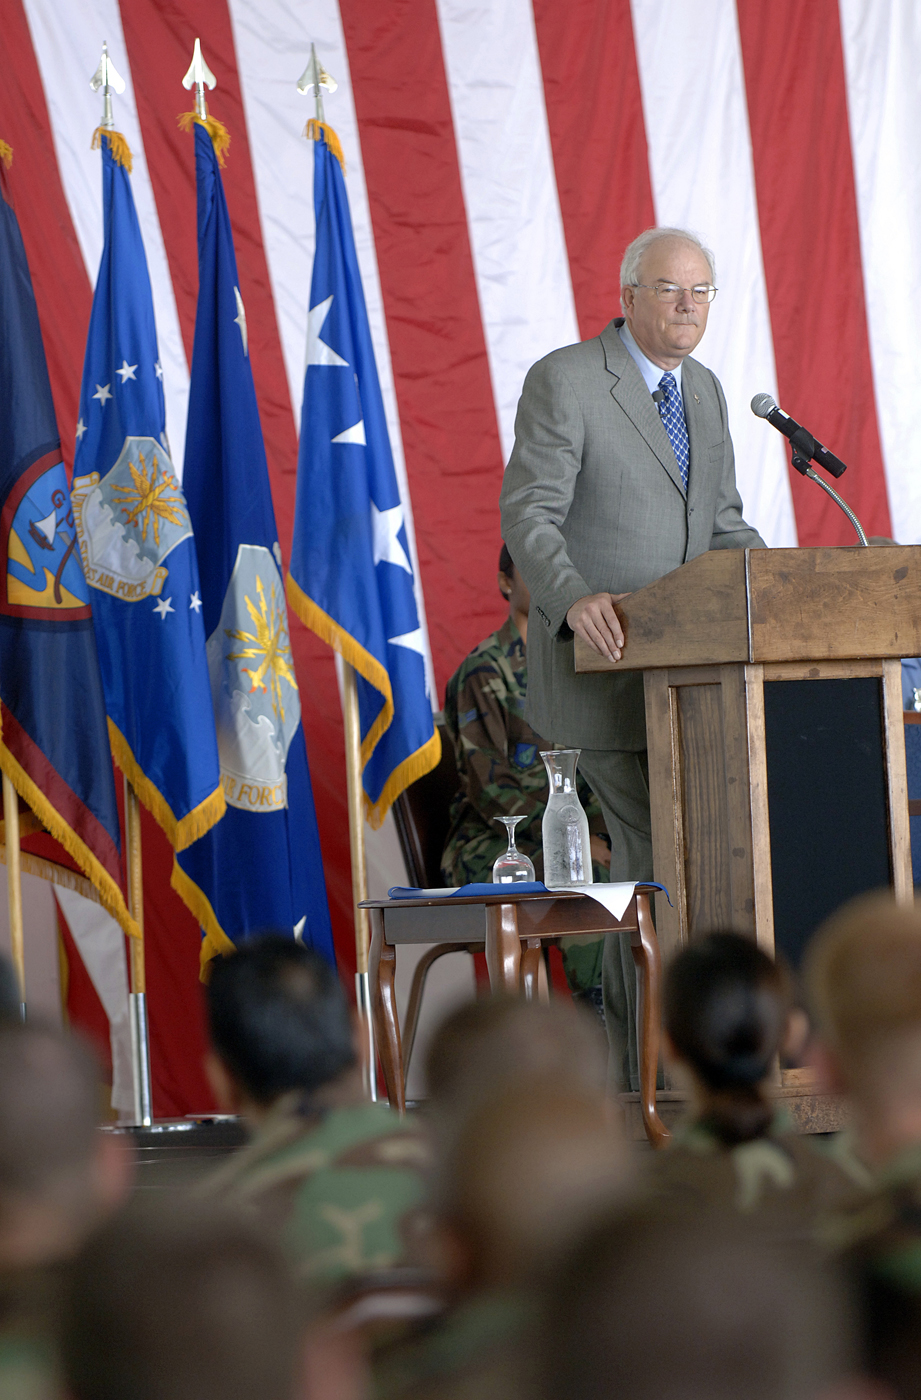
Secretary of the Air Force at Andersen

Secretary of the Air Force Michael W. Wynne speaks to Airmen about Air Force Smart Operations 21 at Andersen Air Force Base, Guam, Monday, March 20, 2006. Secretary Wynne is responsible for organizing, training, equipping and providing for the welfare of nearly 370,000 men and women on active duty, 180,000 members of the Air National Guard and the Air Force Reserve, 160,000 civilians, and their families.